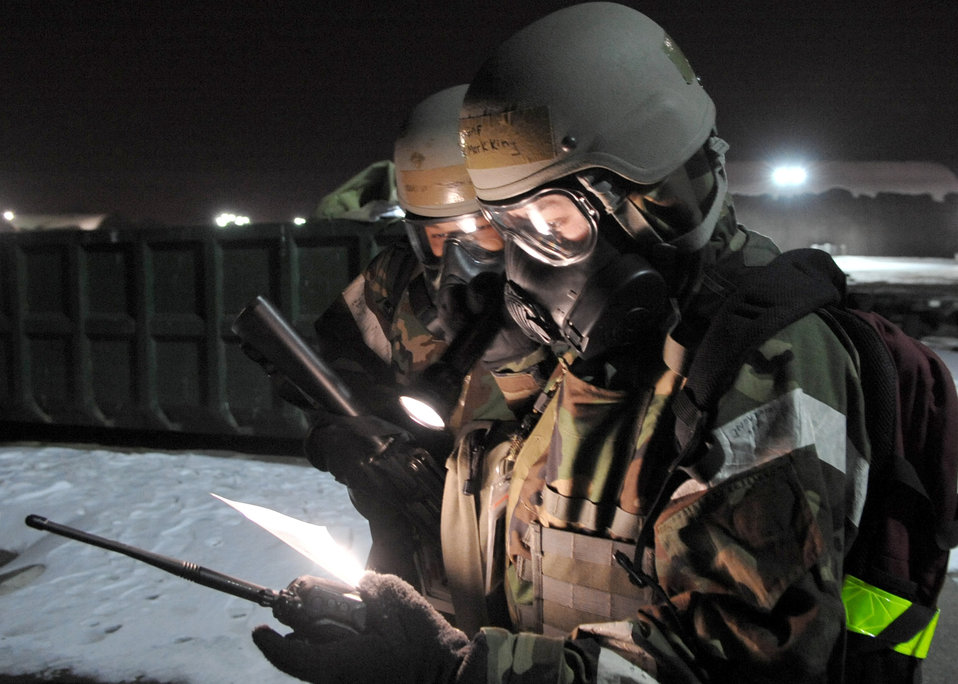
Beverly Bulldog 11-01

Airmen read instructions while conducting a post-attack reconnaissance sweep Jan. 28, 2011, at Osan Air Base, South Korea, as part of Beverly Bulldog 11-01, an operational readiness exercise. Post-attack reconnaissance sweeps are conducted after an attack to survey the area for contamination, unidentified explosive ordnance, casualties or suspicious activity.